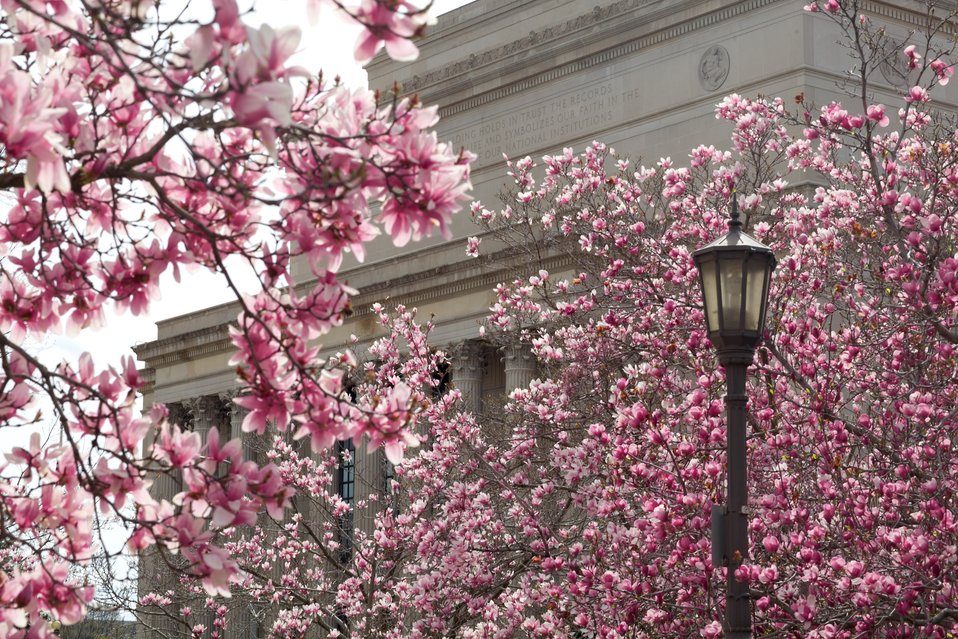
Blooming Magnolias in Indiana Plaza, catty-corner from the National Archives in Washington, DC